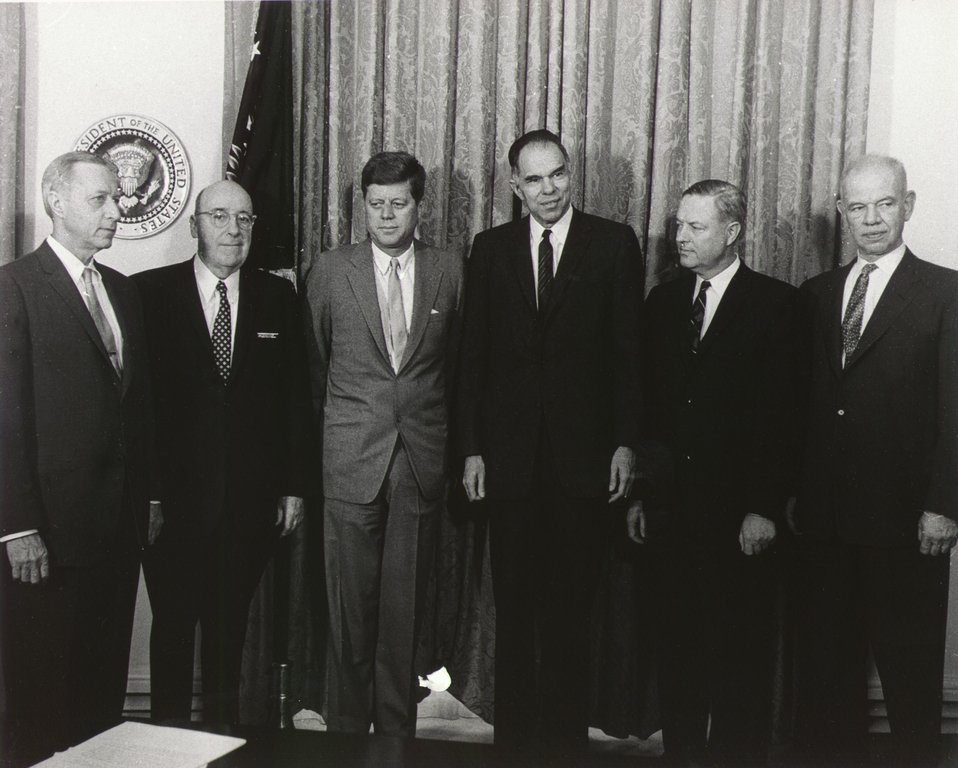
Fermi Award Ceremony for Teller in 1962.